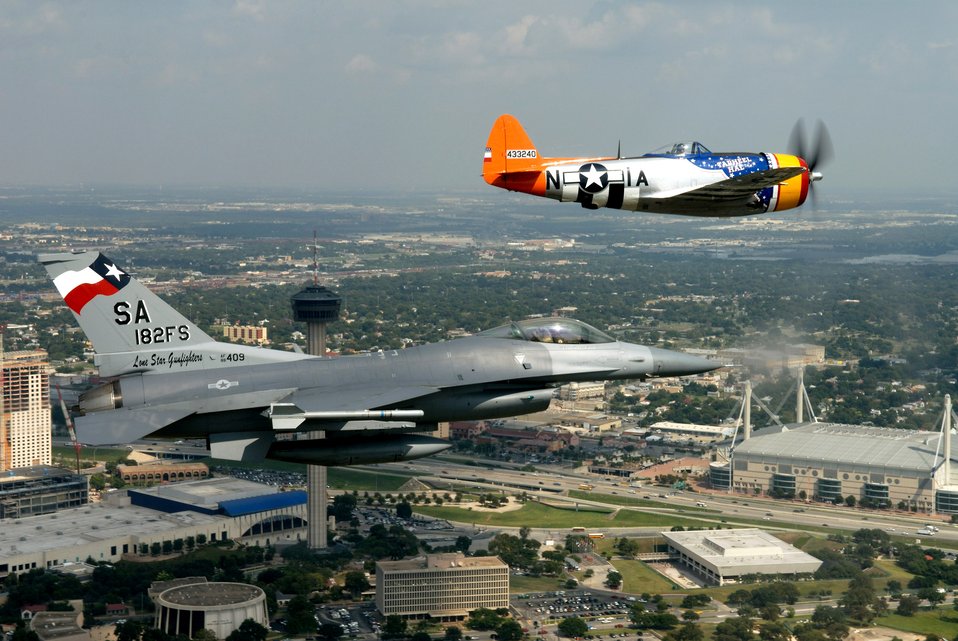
Falcon meets Thunderbolt

A vintage P-47 Thunderbolt and an F-16 Fighting Falcon perform a heritage flight over San Antonio Oct. 11 as part of the 182nd Fighter Squadron's 60th anniversary celebration. The squadron, which belongs to the Texas Air National Guard 149th Fighter Wing, traces its heritage to the 396th Fighter Squadron, which flew P-47s in combat during World War II. For the Oct. 11 flight, Robbie Vajdos of Louise, Texas, flew the P-47 from the Lone Star Flight Museum, in Galveston, Texas. Lt. Col. John Kane of the 182nd FS piloted the F-16.